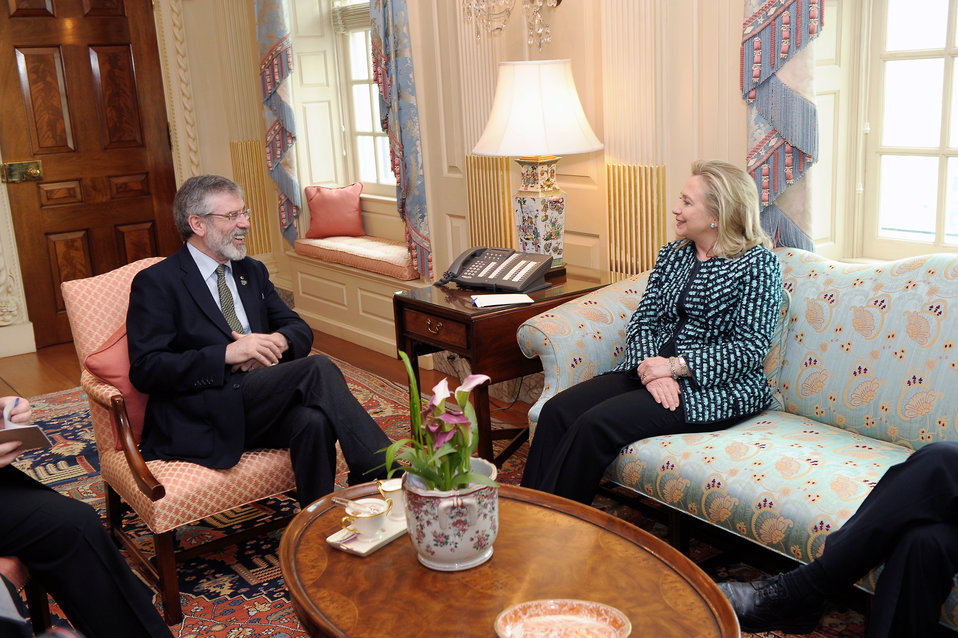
Secretary Clinton Meets With President of Sinn Fein Adams

U.S. Secretary of State Hillary Rodham Clinton meets with Gerry Adams, President of Sinn Fein, at the Department of State in Washington, D.C. on March 21, 2012.